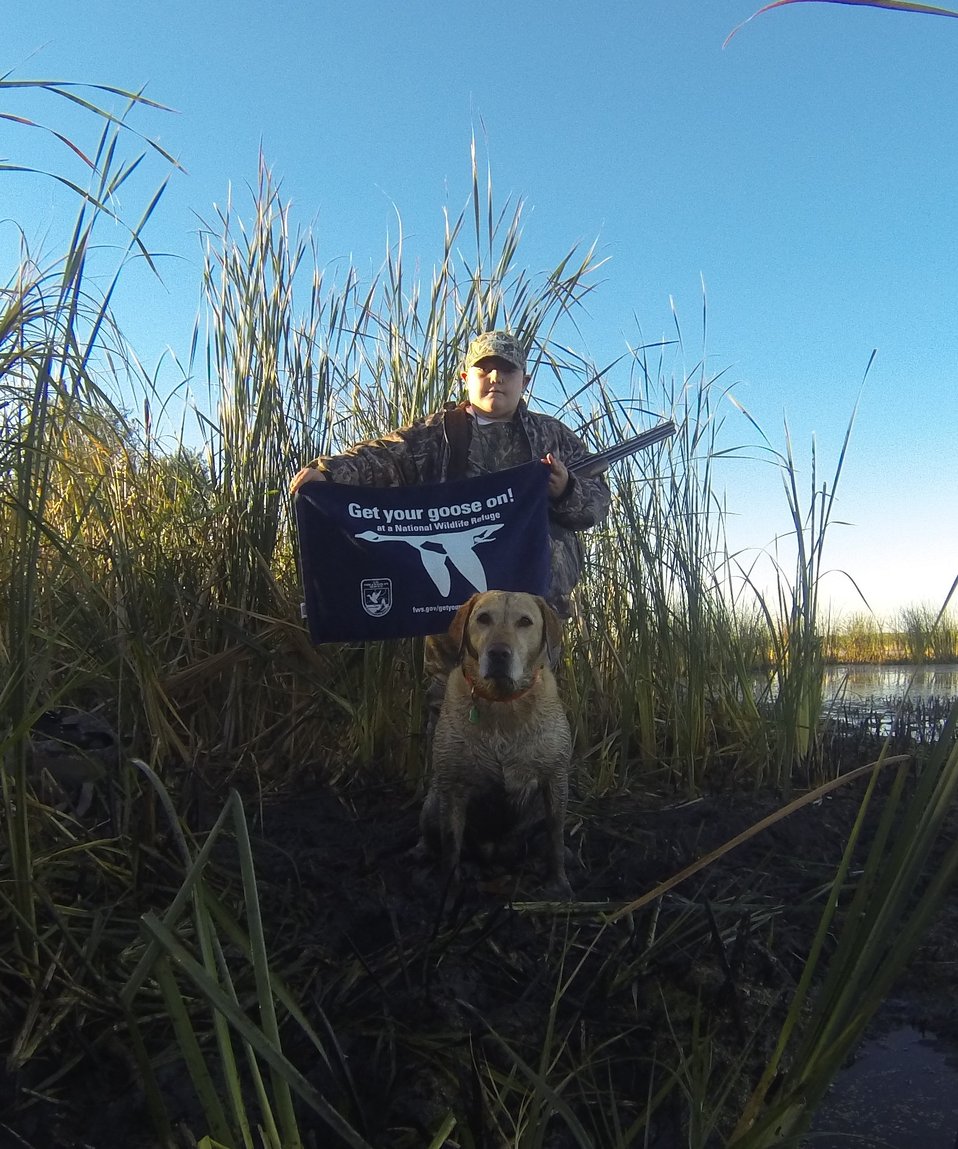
Youth Waterfowl Hunter

2013 HURON WMD, USFWS, YOUTH WATERFOWL HUNT 'Get Your Goose On!' at Huron WMD Youth Waterfowl Hunt in Huron, SD. Participants must take one day of waterfowl hunting classes followed the next morning by a waterfowl hunt. The Huron Wetland Management District hosted its 10th annual Youth Waterfowl Hunt in September. This event provided 28 youth hunters between the ages of 12 – 15 and (new) mentored hunters (10-11), an opportunity to learn about various migratory birds and their habitats, duck and goose calling, decoys, and waterfowl hunting techniques. This event continues to be a success each year due to the dedicated volunteers within the community of Huron.